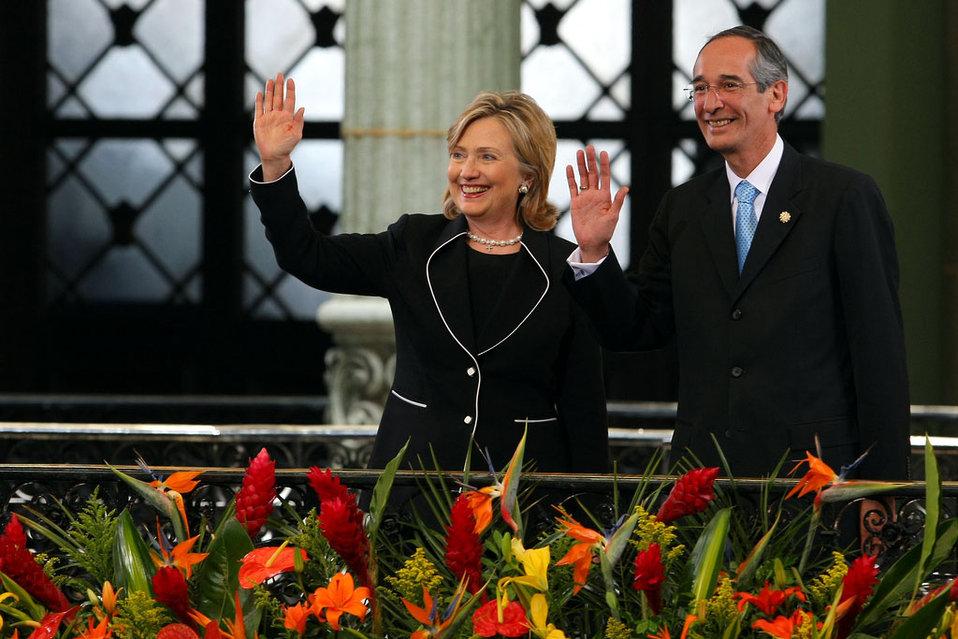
Secretary Clinton With Guatemalan President Alvaro Colom

U.S. Secretary of State Hillary Rodham Clinton waves with Guatemalan President Alvaro Colom on the Presidential Balcony, National Palace of Culture, Guatemala City, Guatemala March 5, 2010.